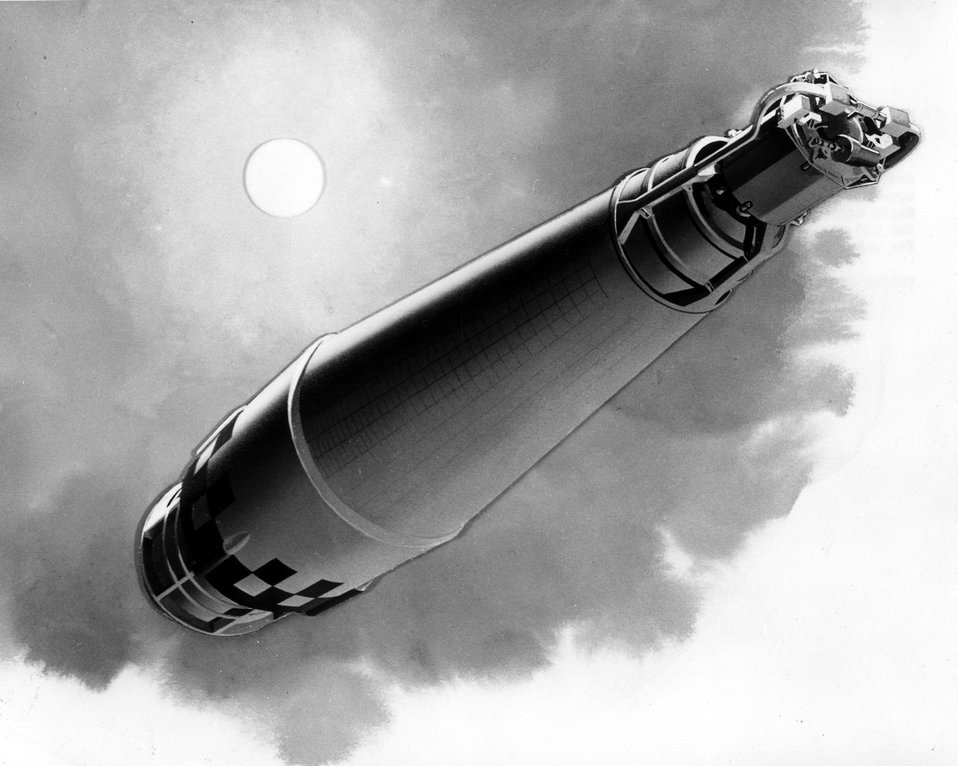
Artist's Conception of a SNAP 10A system in space.